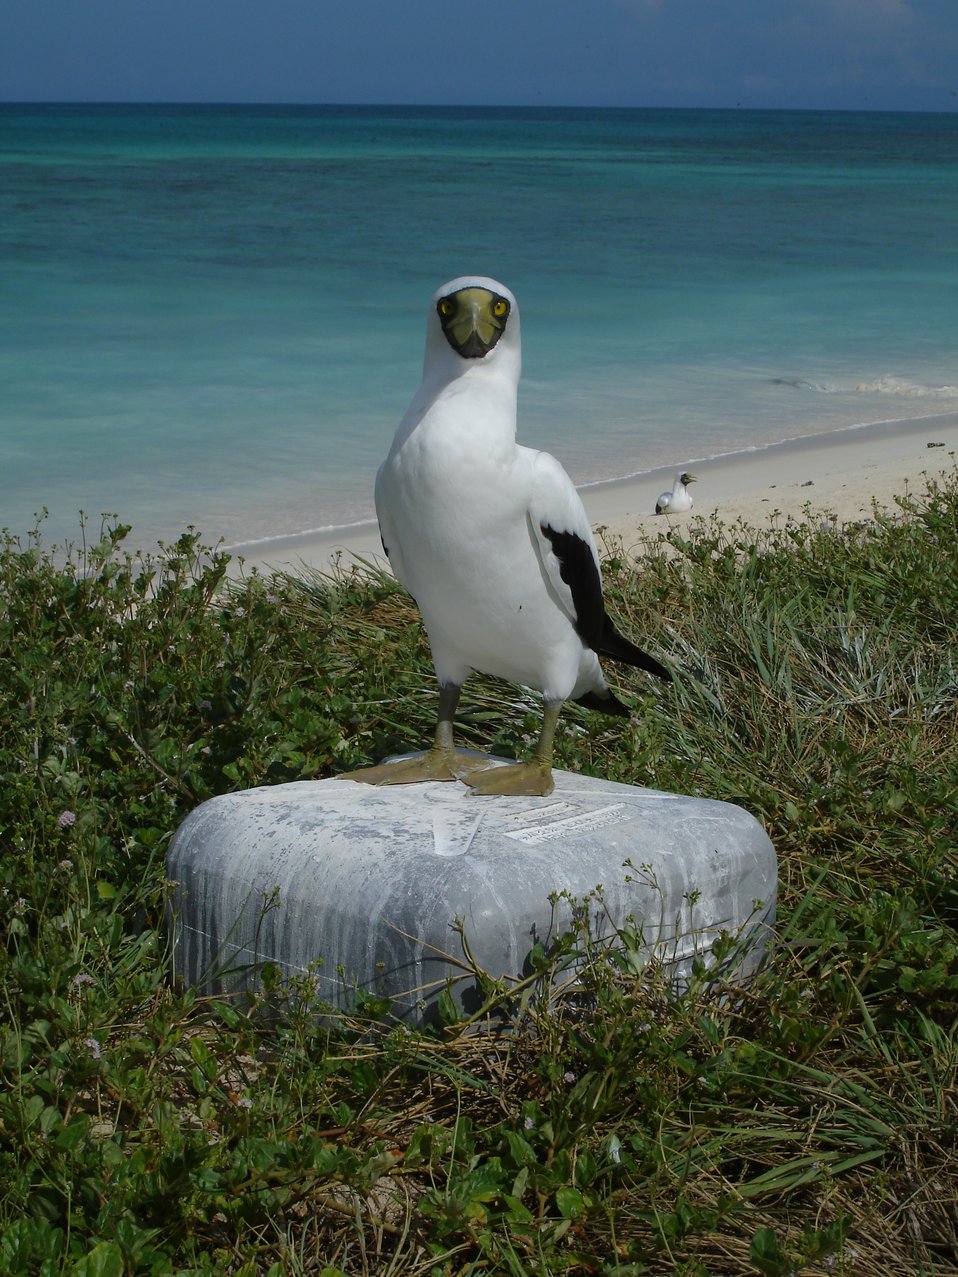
Masked booby